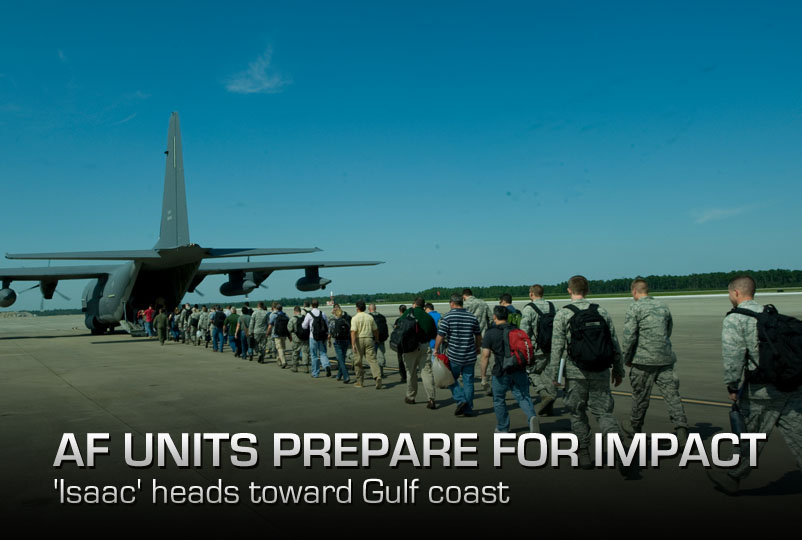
AF units prepare for impact

irmen of 11th Intelligence Squadron board a C-130 during evacuations on the flightline at Hurlburt Field, Fla., Aug. 26, 2012. Hurlburt Field assets were being evacuated as Tropical Storm Isaac approaches the Gulf Coast region.